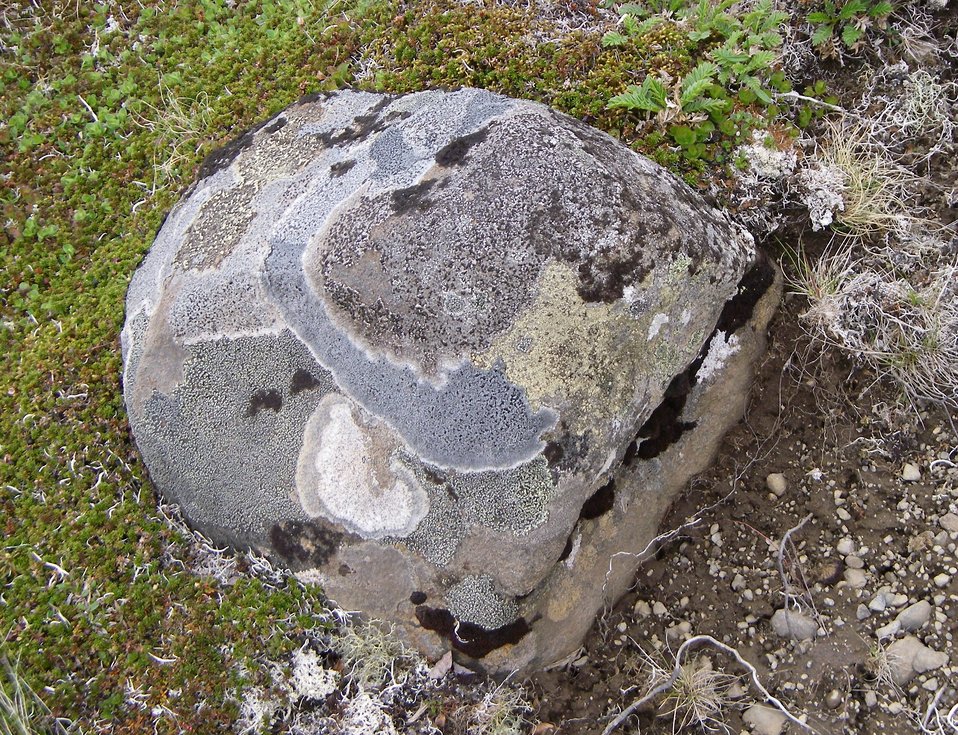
Lichen

Wilderness, Izembek National Wildlife Refuge
Photo by Kristine Sowl,
USFWS, Public Domain